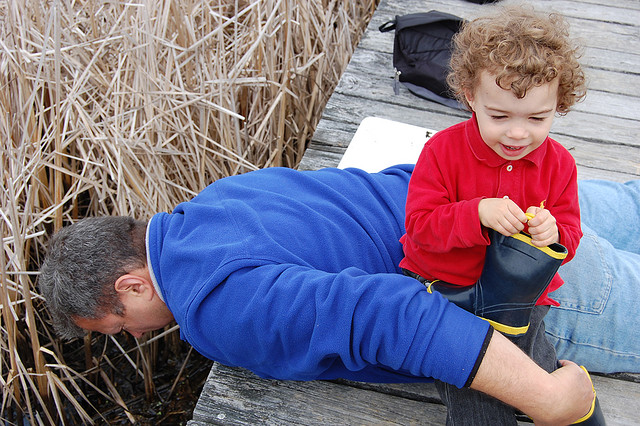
at sense of wonder camp

Plum Island National Wildlife Refuge